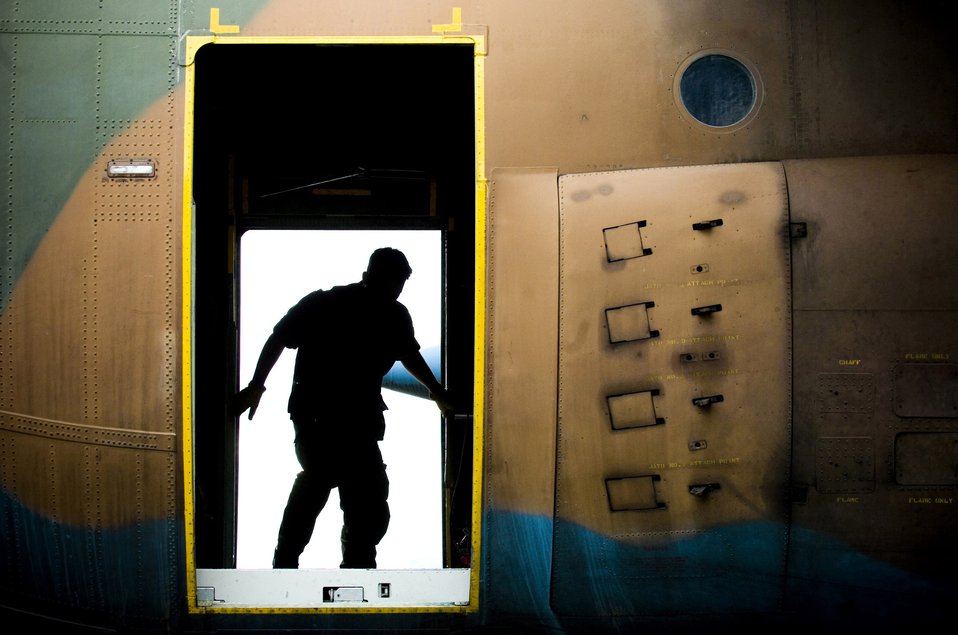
Red Flag-Alaska

Spanish Senior Airman Jesus Utrilla moves about the tail section of a C-130 Hercules, gathering equipment to secure the aircraft after landing July 23 at Elmendorf Air Force Base, Alaska. More than 80 aircraft and 1,500 servicemembers from six countries flew in the multinational exercise, Red Flag-Alaska.